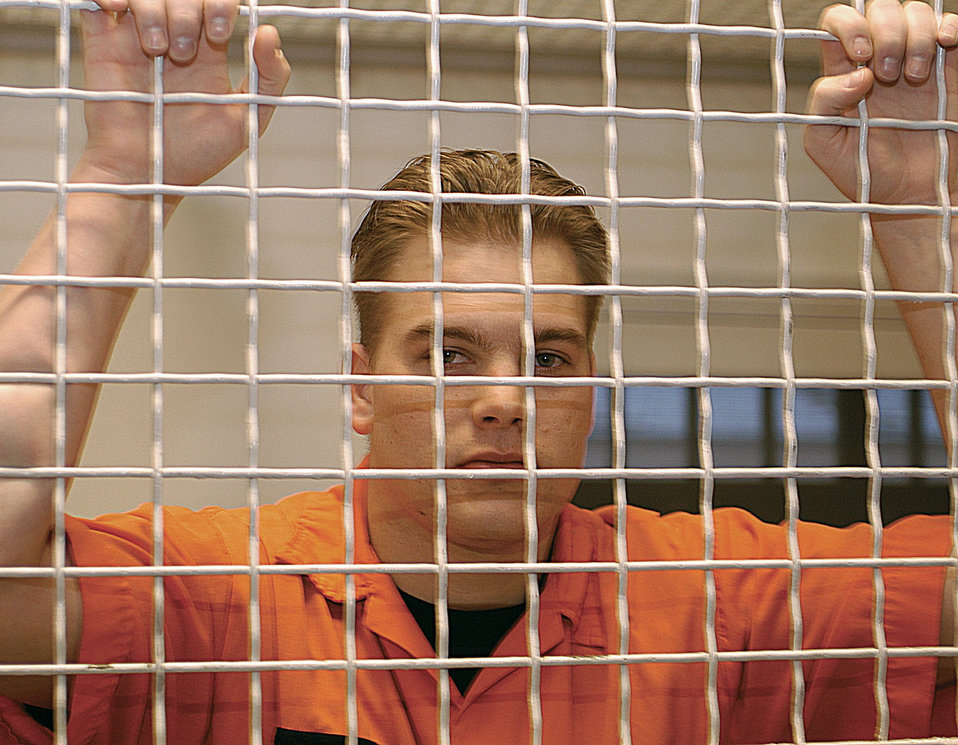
Drugs airman's dead end

HILL AIR FORCE BASE, Utah -- Airman Basic Ryan Palmquist looks out from his cell in the confinement facility here. He was court-martialed for the use, distribution and possession of drugs. He was given a bad-conduct discharge, reduction to the lowest enlisted rank, forfeiture of all pay and allowances and confinement for two years and two months.